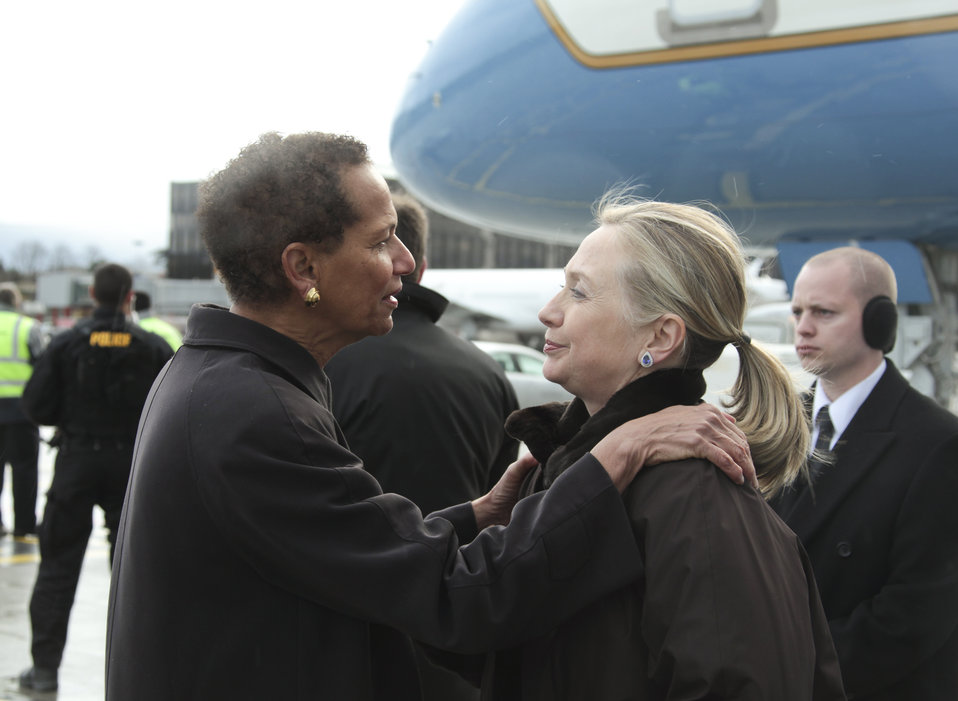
Secretary Clinton Is Greeted By Ambassador King

U.S. Secretary of State Hillary Rodham Clinton is welcomed by U.S. Ambassdor to the United Nations in Geneva Betty E. King to Geneva, Switzerland, on December 6, 2011.